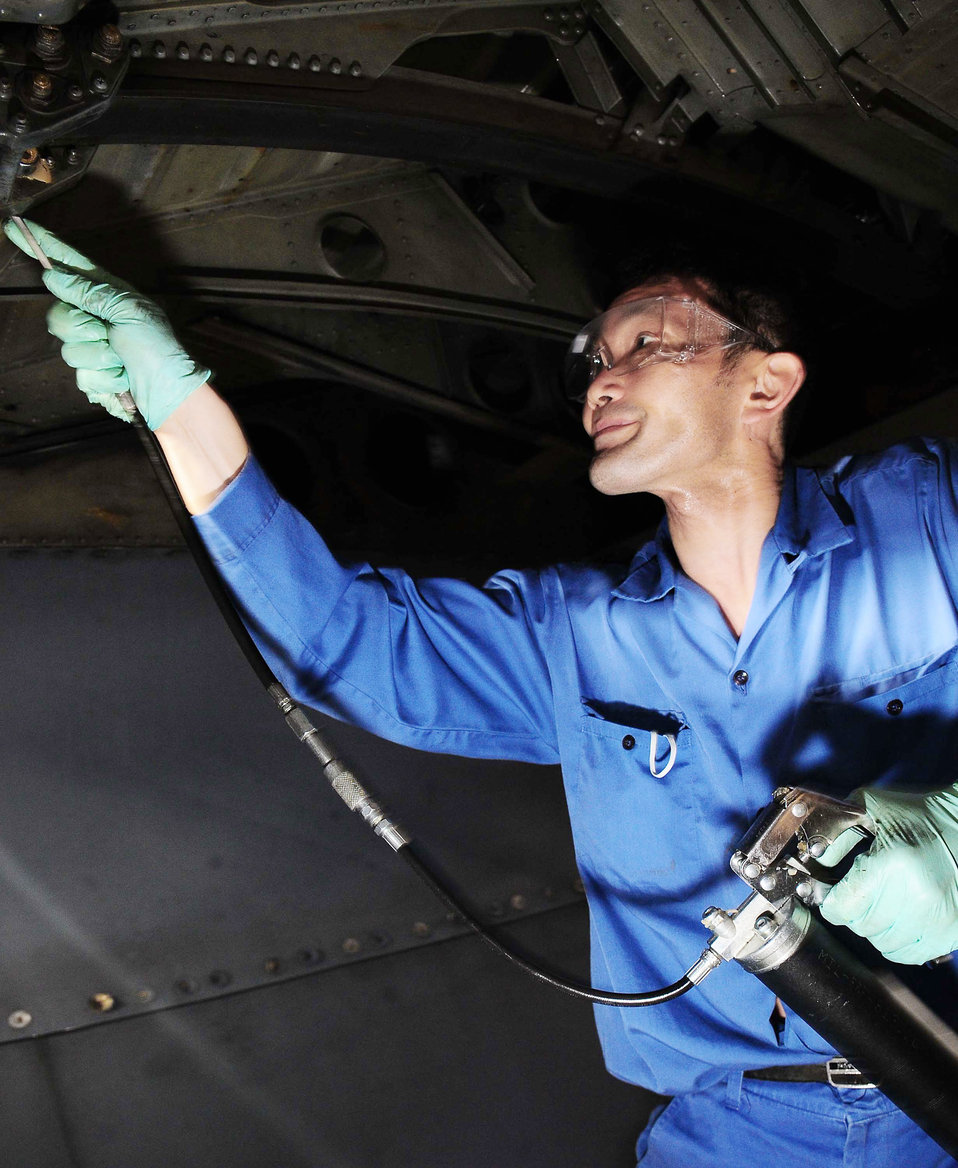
Yokota maintainers use AFSO21 to improve C-130 inspection process

Toshio Shimida lubes a flap track on a C-130 Hercules March 16, 2010, at Yokota Air Base, Japan. Each plane undergoes an isochronal inspection which consists of a 14-day detailed inspection before the plane is ready for re-launch. Mr. Shimida is assigned to the 374th Maintenance Squadron.